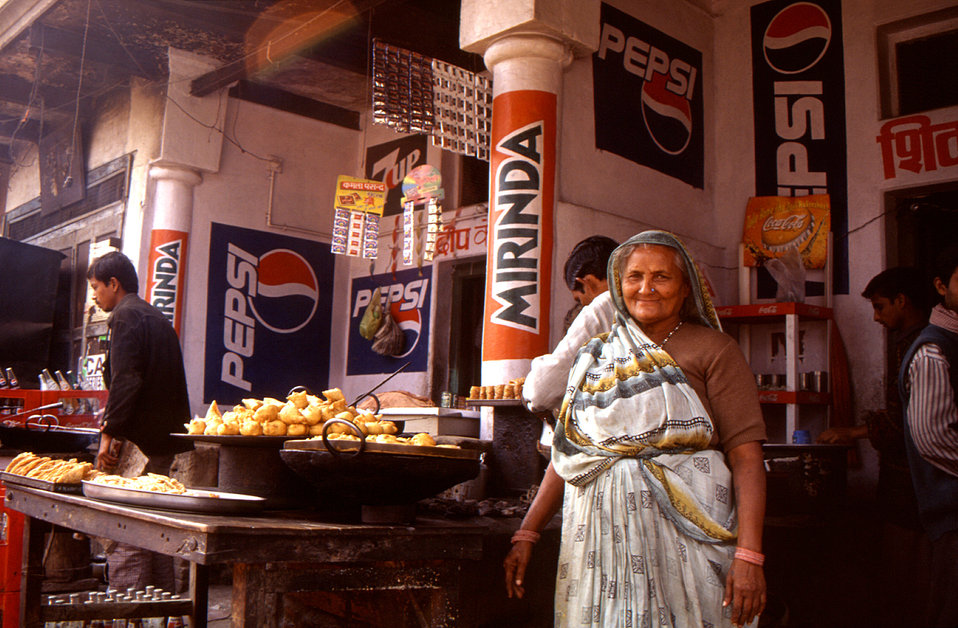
Proudly standing outside her food stall, was this elderly woman who was selling her produce to patrons in one of India's many popular street markets. This particular market was located in the downtown area in the District of Gorakhpur. The photograph was provided by Chris Zahniser, B.S.N., R.N., M.P.H., also a Stop Transmission of Polio (STOP) team member and photographer, assigned to the state of Uttar Pradesh in northern India. Chris spent three months working in the Districts of Gorakhpur and Deoria.